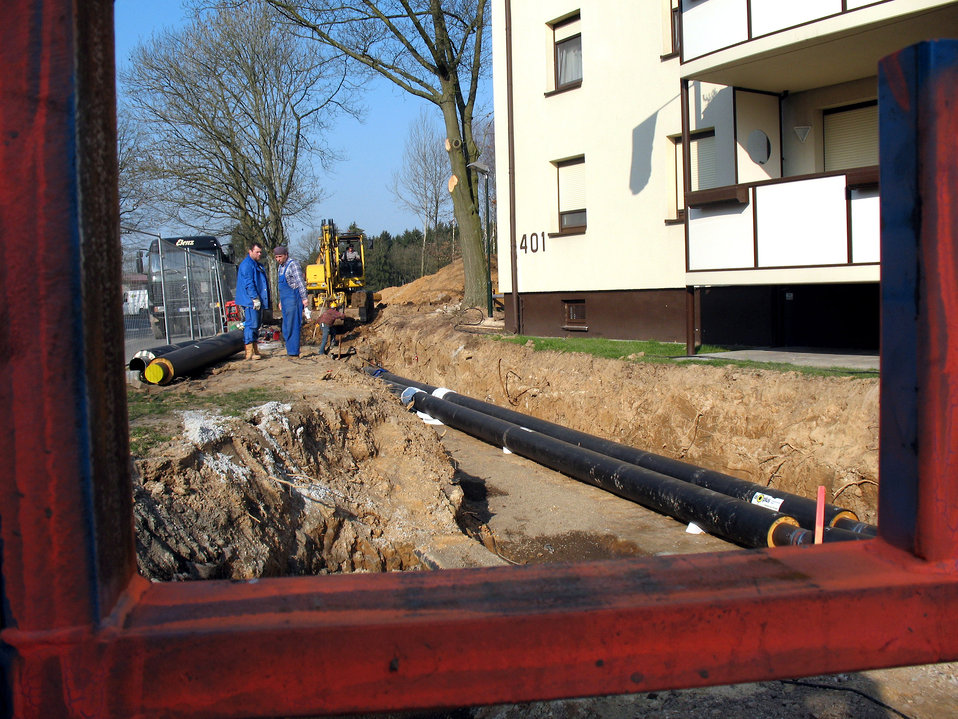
New housing on the way for Spangdahlem

Construction workers maneuver around the front yards in the old stairwell housing March 30 at Spangdahlem Air Base, Germany. The Air Force is spending $83 million to demolish the old stairwell housing and building 139 new homes at Spanghadhlem AB.